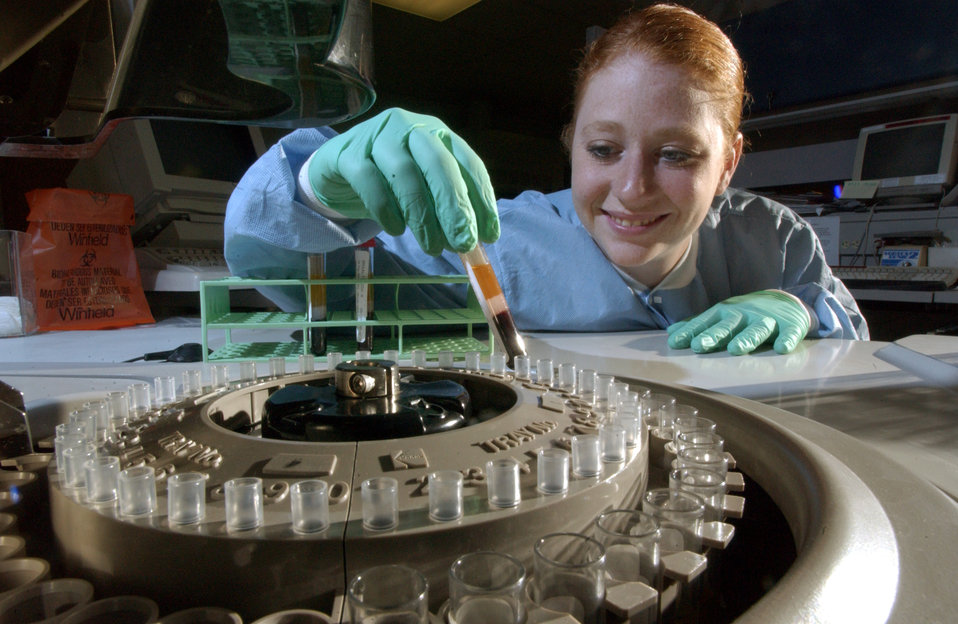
Analyze this!

MAXWELL AIR FORCE BASE, Ala. -- Tech. Sgt. Michael Damron (right) reviews blood count procedures with Senior Airman Michael Thornton. Both Airmen are assigned to the 42nd Medical Group here. Each year, the people in the group's laboratory conduct more than 10,000 hematology tests. The medical facility here is one of three that support processing for new Airmen.